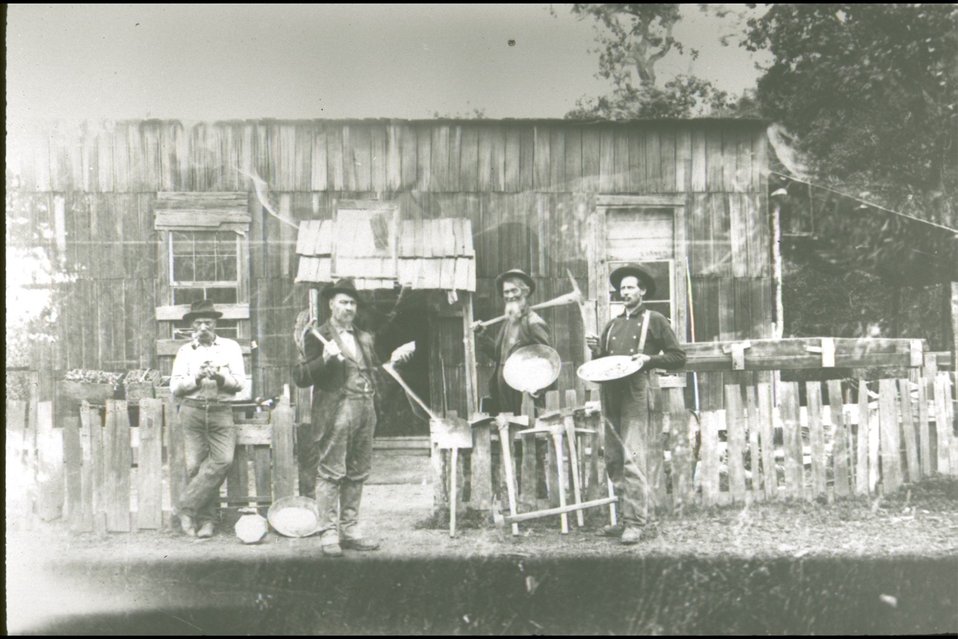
Rogue River - Miners.